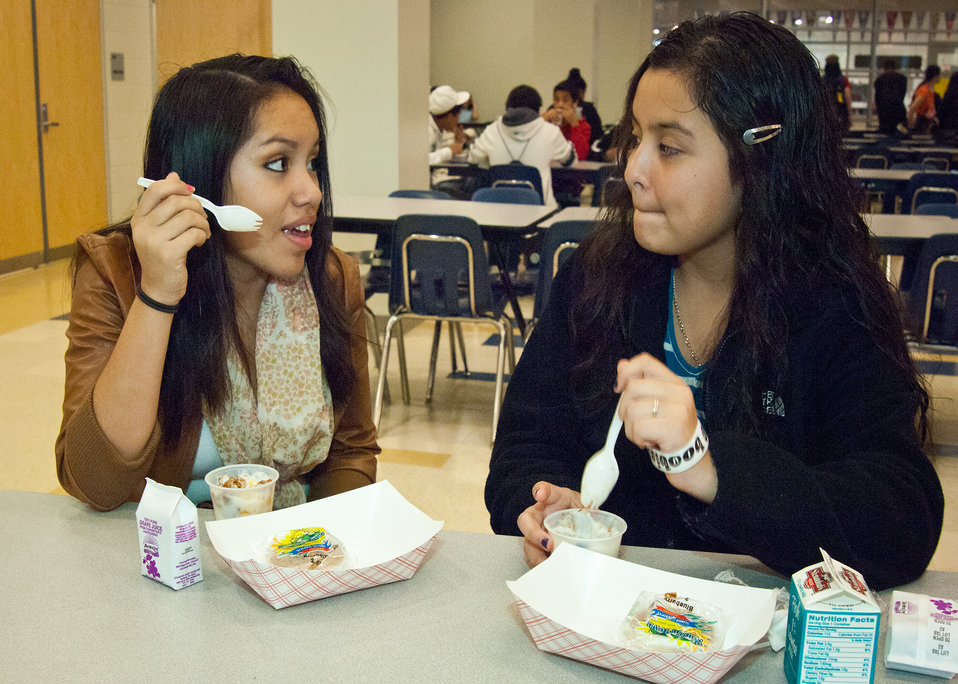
Carolyn Hernandez (left) and Nely Garcia (right) students at Washington-Lee High School in Arlington, Virginia enjoy parfait cups of yogurt, fruit and granola for breakfast, on Wednesday, October 25, 2011. The National School Breakfast and National School Lunch Programs are federally assisted meal programs administered by the United States Department of Agriculture, Food and Nutrition Service operating in public, nonprofit private schools and residential child care institutions. It provides nutritionally balanced, low-cost or free breakfasts and lunches to children each school day.